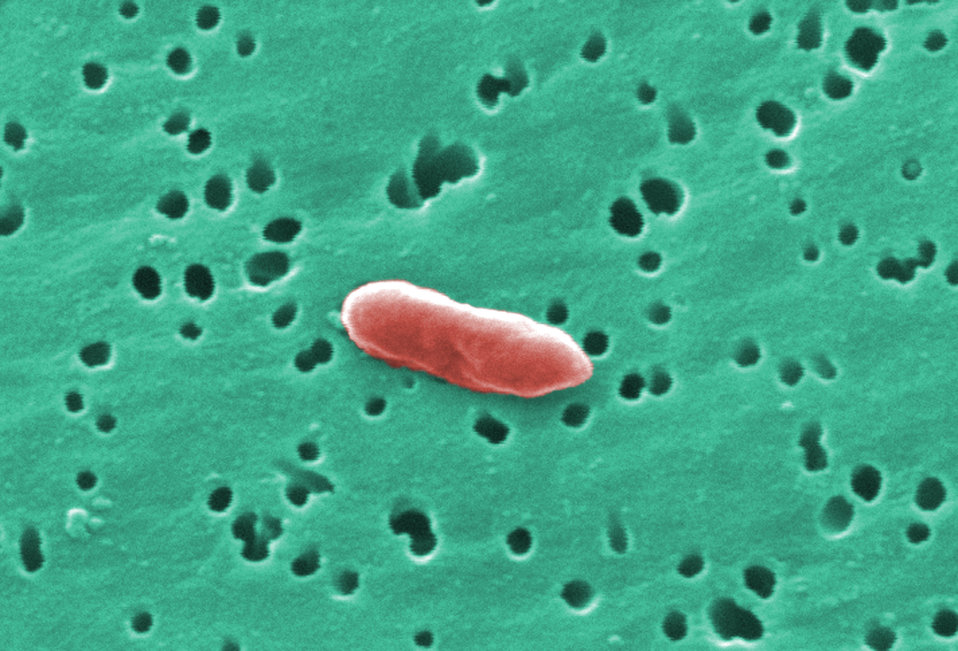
This digitally-colorized scanning electron micrograph (SEM) depicted a Gram-negative Sebaldella termitidis bacterium.